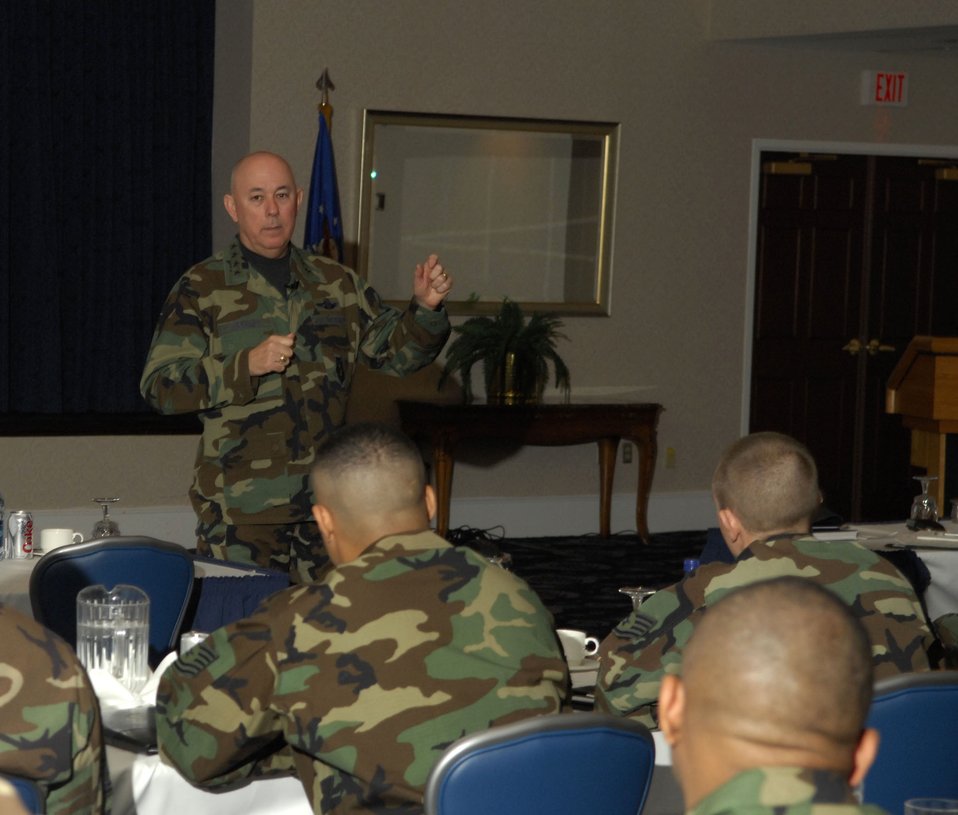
Airmen learn new perspectives in leadership

Air Force Chief of Staff, General T. Michael Moseley spoke March 13 to more than 50 NCOs about policy changes, recapitalization, the